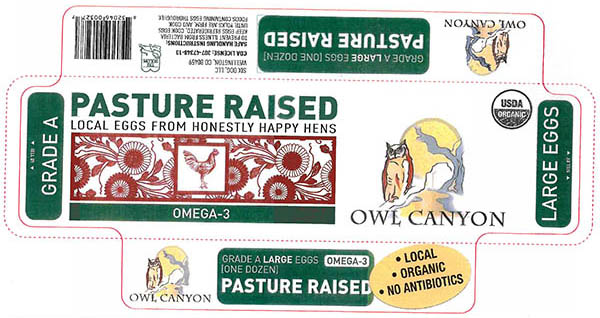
RECALLED – Eggs

May 1, 2014 – Product Recall – Sixdog Investments Voluntarily Recalls Eggs Because of Possible Health Risk.